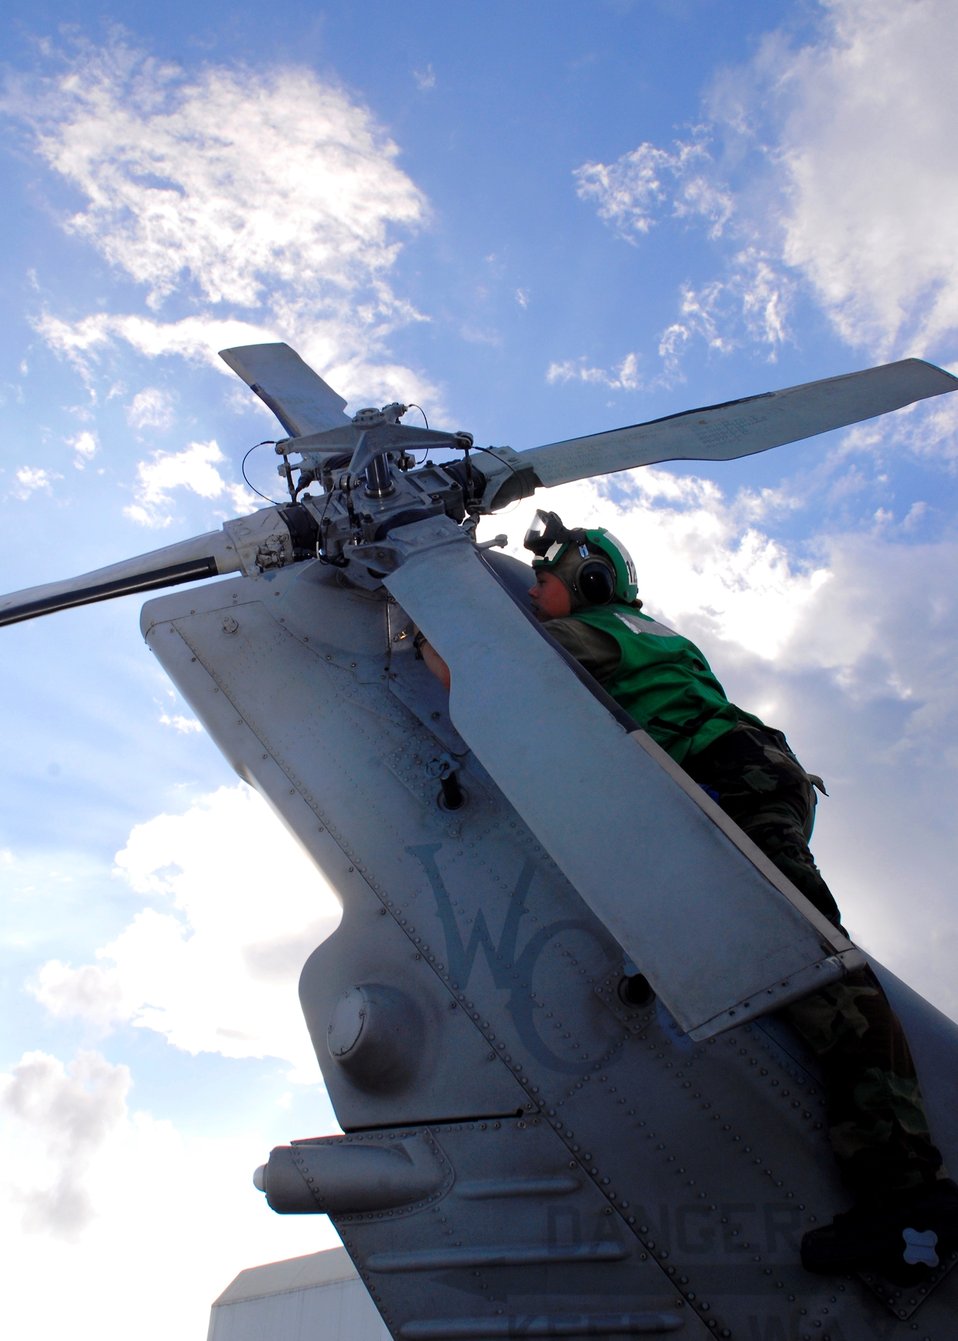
Aviation Machinist’s Mate 3rd Class Sarah Rogers Checks the Oil Level in the Tail Gear Box of an MH-60S Knighthawk Helicopter

Aviation Machinist’s Mate 3rd Class Sarah Rogers, assigned to Helicopter Combat Squadron 23 “Wild Cards”, checks the oil level in the tail gear box of an MH-60S Knighthawk helicopter on the flight deck of the Military Sealift Command hospital ship USNS Mercy (T-AH 19) on July 8, 2010. Mercy is conducting Pacific Partnership 2010, the fifth in a series of annual U.S. Pacific Fleet humanitarian and civic assistance endeavors to strengthen regional partnerships.